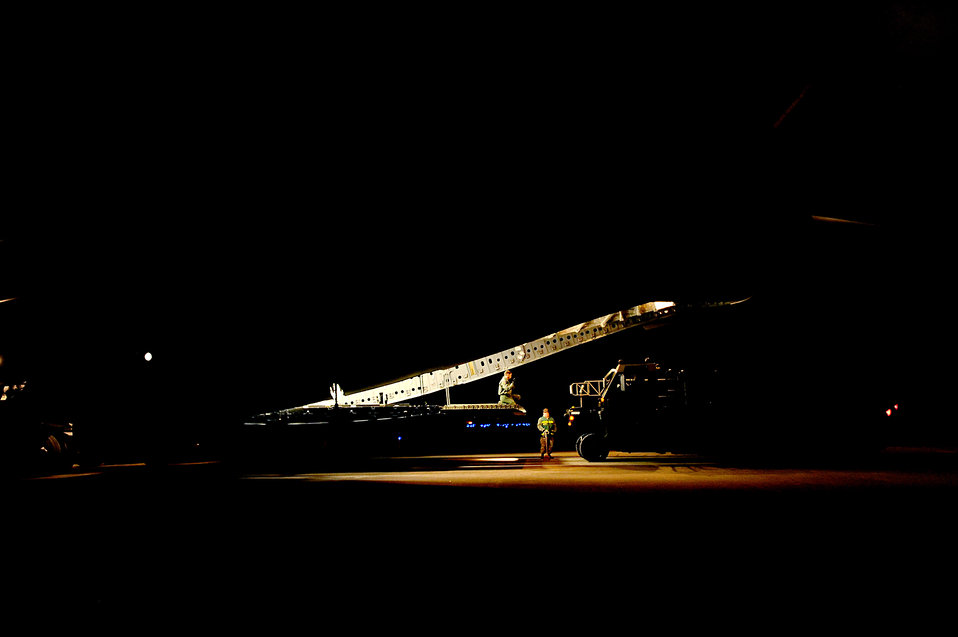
OPERATION TOMODACHI

A U.S. Air Force C-17 III Globemaster sits on the flight line ready to off load earthquake relief supplies on March 13, 2011 at Misawa Air Base, Japan for Operation Tomodachi.